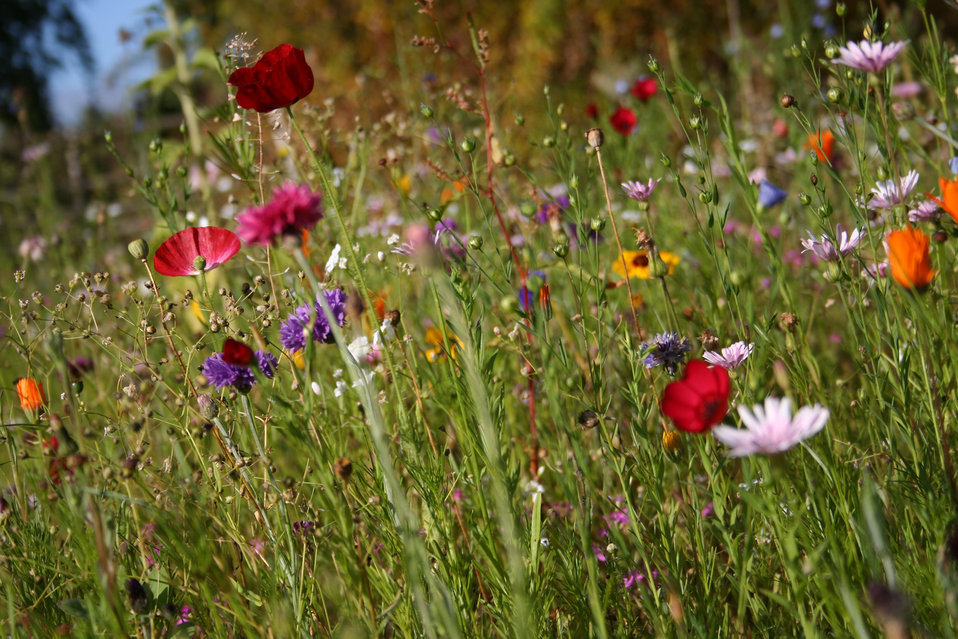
Flowers

Autumn flowers.